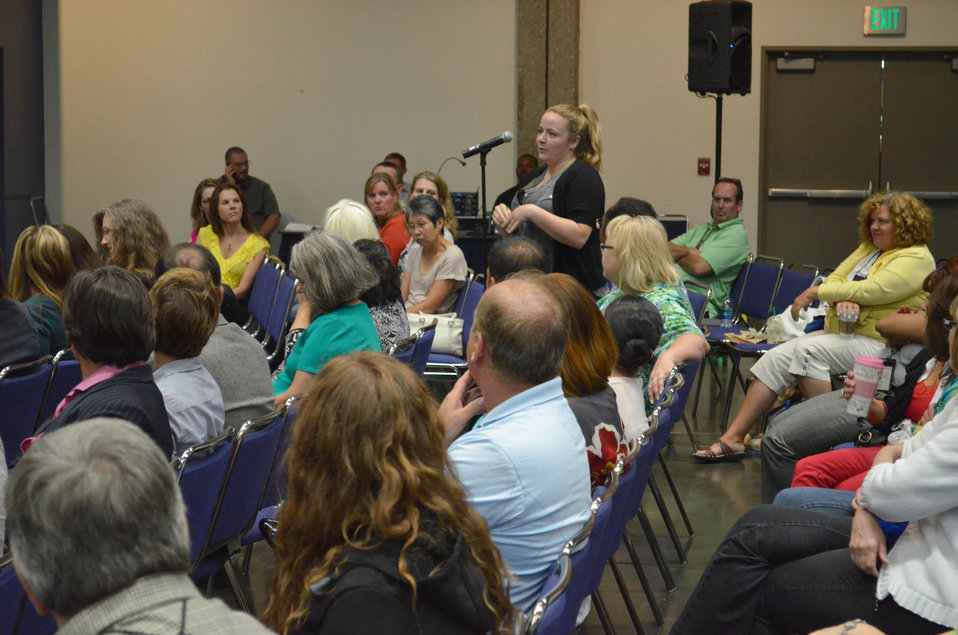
Questions and answers at the town hall meeting

130716-A-QE256-016 – Colby Conrad, a project management specialist with the U.S. Army Corps of Engineers Sacramento District, poses a question to the district’s new commander, Col. Michael J. Farrell, during a town hall meeting July 16, 2013 at in Sacramento, Calif. Farrell spoke about his experience with the Corps of Engineers and explained the direction he wants to see the district go during his time in command.